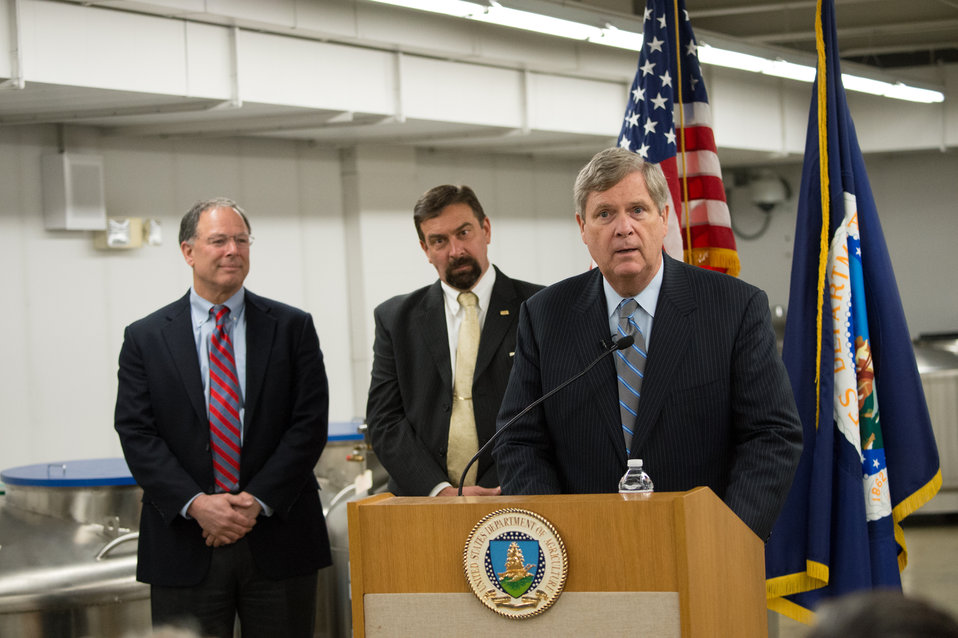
Colorado State University (CSU) Dean Agricultural Sciences Dr. Craig Beyrouty and CSU President Dr. Anthony Frank stand with U.S. Department of Agriculture (USDA) Secretary Vilsack today as he announced a $9.8 million grant to a consortium of academic, industry such as Coolplanet Energy Systems and government organizations led by Colorado State University (CSU) and their partners to research using insect-killed trees in the Rockies as a sustainable feedstock for bioenergy, during a meeting with the staff and news media in the Cryogenic Storage Vault where 45-50 cryogenic tanks hold animal germplasm, plant tissue culture, and seeds are stored at less than -196 °C (-321 °F) in liquid storage or to -193 C. (-315 °F) in vapor storage degrees centigrade (-321 °F) visits of the Agriculture Research Service (ARS) National Center for Genetic Resources Preservation (NCGRP) in Ft. Collins, CO, on Wednesday, Nov. 6, 2013. NCGRP is the largest agricultural genebank facility in the United States, and one of the largest in the world. The NCGRP staff conducts groundbreaking research to develop more efficient and effective means for preserving plant and animal germplasm, and for better understanding the genetic structure of these invaluable materials. The research findings, preservation techniques, and specialized technology developed by the NCGRP have been adopted by genebanks around the world: many international scientists travel to the NCGRP for research and training. The NCGRP staff conducts groundbreaking research to develop more efficient and effective means for preserving plant and animal germplasm, and for better understanding the genetic structure of these invaluable materials. The research findings, preservation techniques, and specialized technology developed by the NCGRP have been adopted by genebanks around the world: many international scientists travel to the NCGRP for research and training. The NCGRP staff includes 34 full-time USDA/ARS employees (7 of whom are Ph. D.–level scientists), plus 8 part-time and 16 student employees. The FY13 budget for the center is $4.7 million.The FY13 budget for the center is $4.7 million.